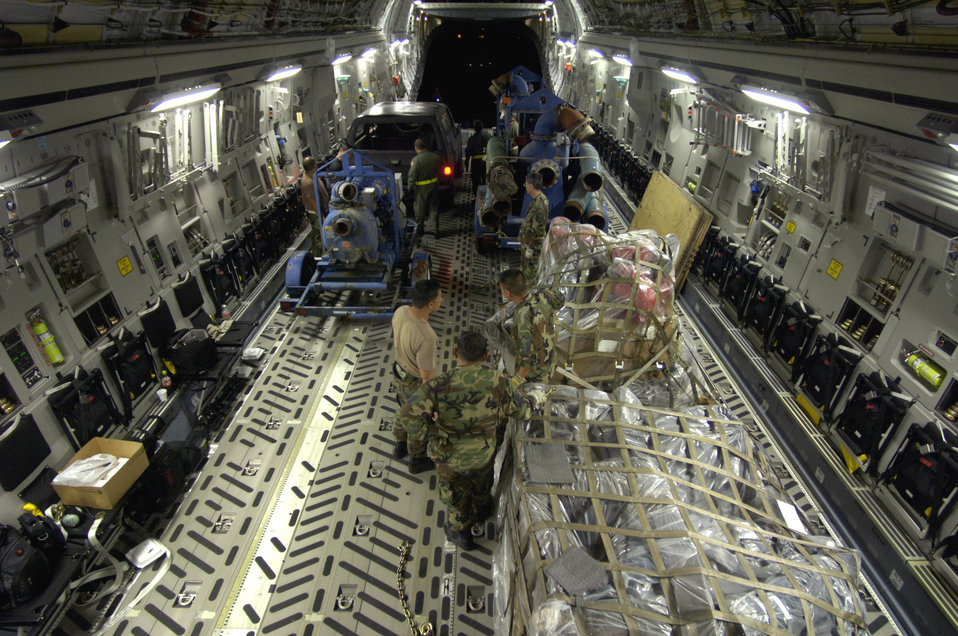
C-17s deliver relief to Kauai

Airmen with the 291st Combat Communications Squadron and loadmasters from 204th Airlift Squadron load water pumps and recovery equipment onto a C-17 Globemaster III at Hilo International Airport, Hawaii, Thursday, March 16, 2006. The C-17 delivered recovery equipment to the island of Kauai, Hawaii, after a dam burst, isolating thousands of people along the island's north shore.